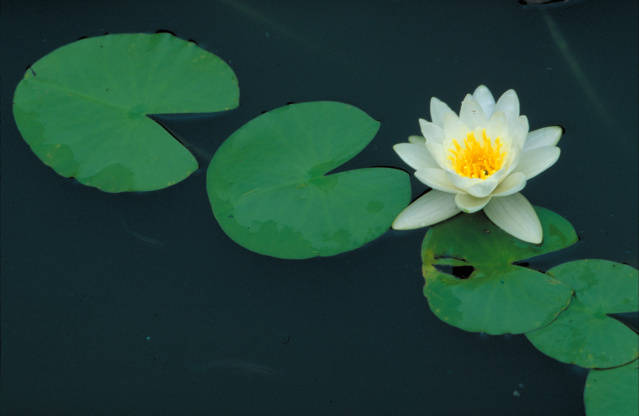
white waterlily